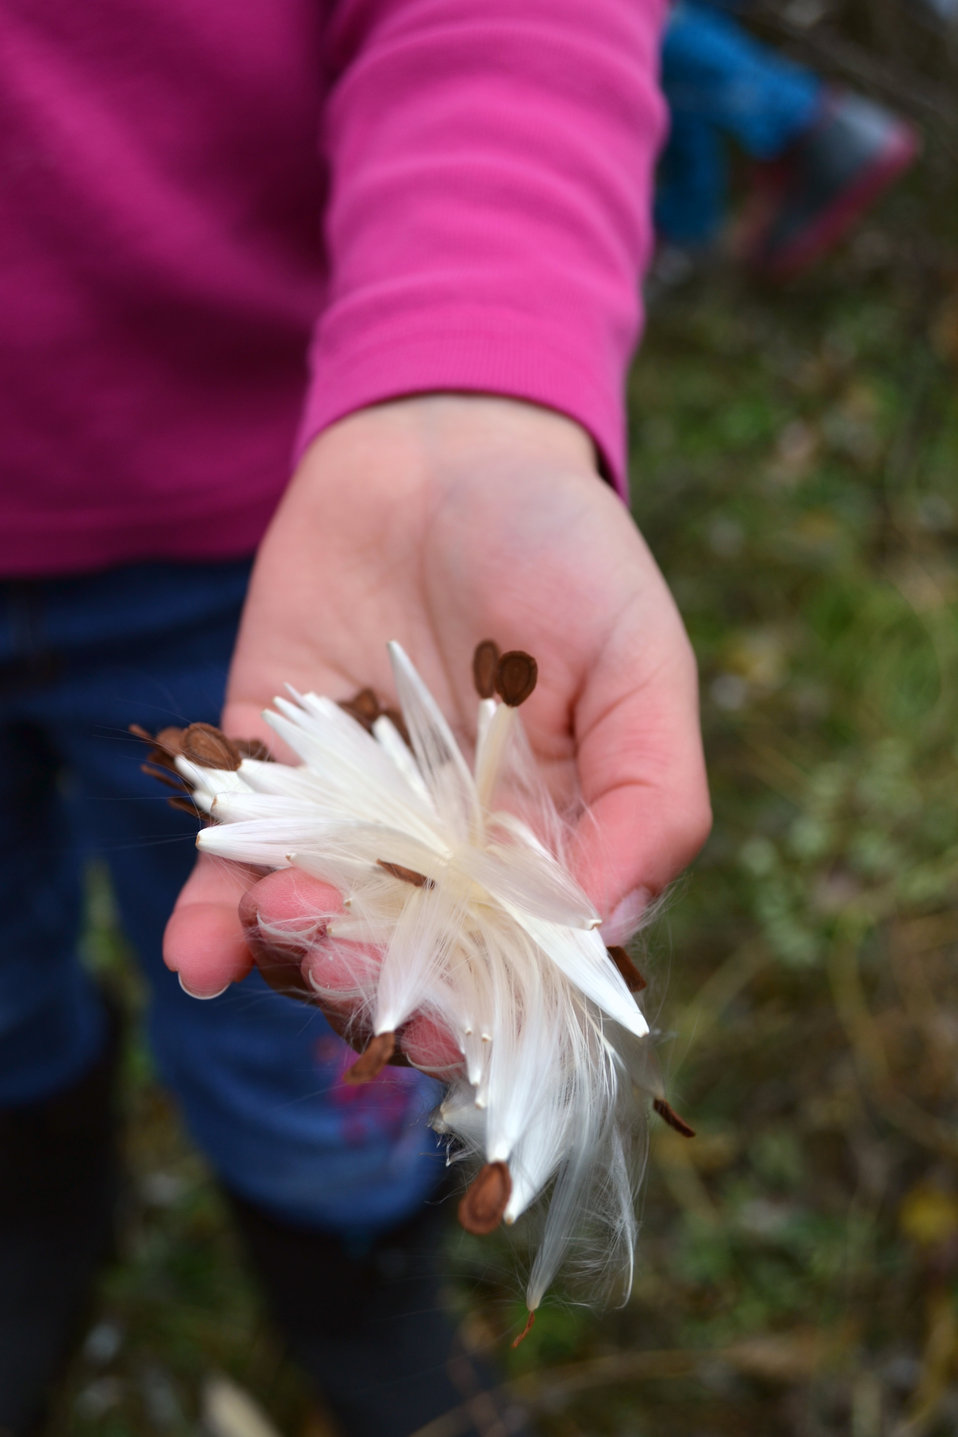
Milkweed Seeds